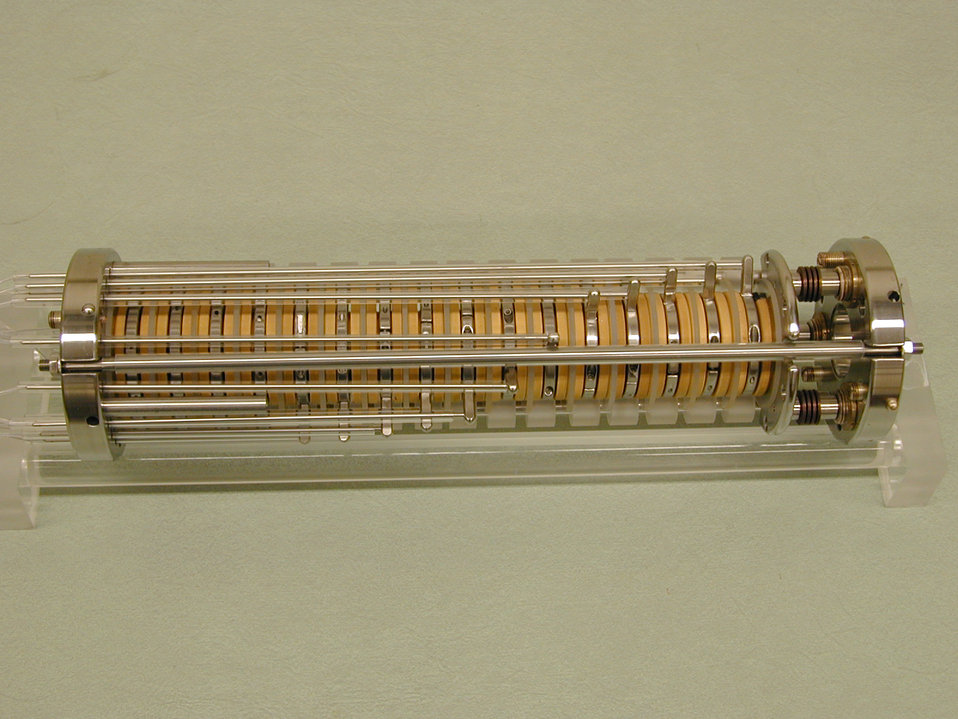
Proton trap used by the NIST-led research team to determine the lifetime of the neutron.